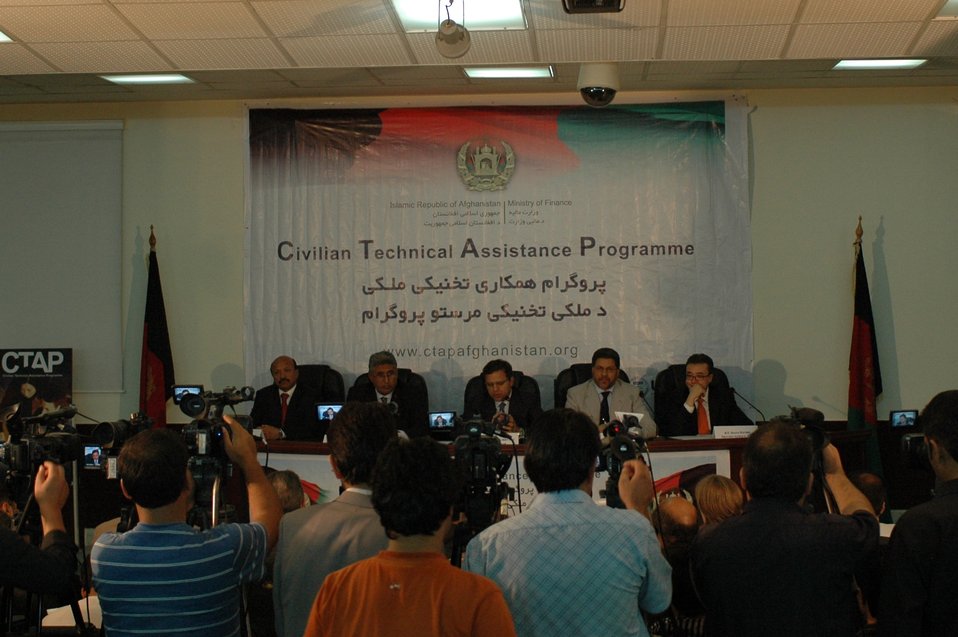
Civilian Technical Assistance Program Launch